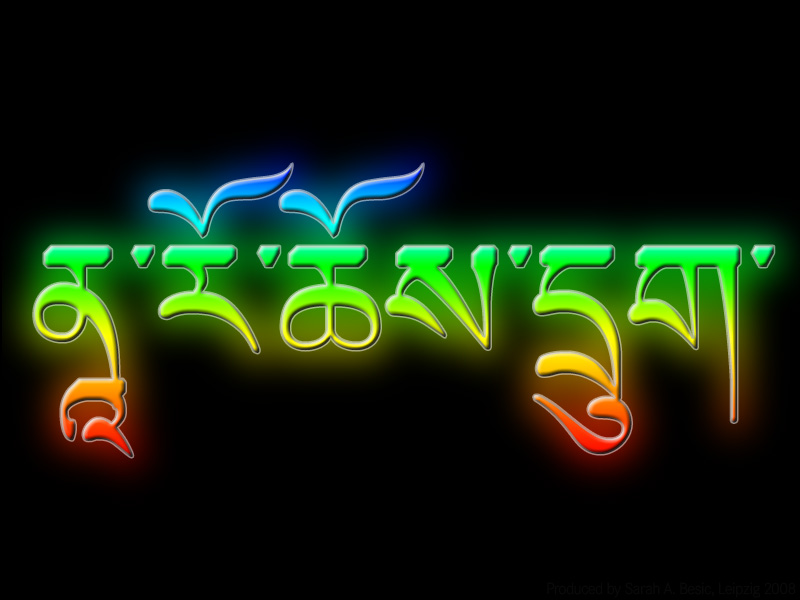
Typographical illustration of nA ro chos drug in tibetan glyphs